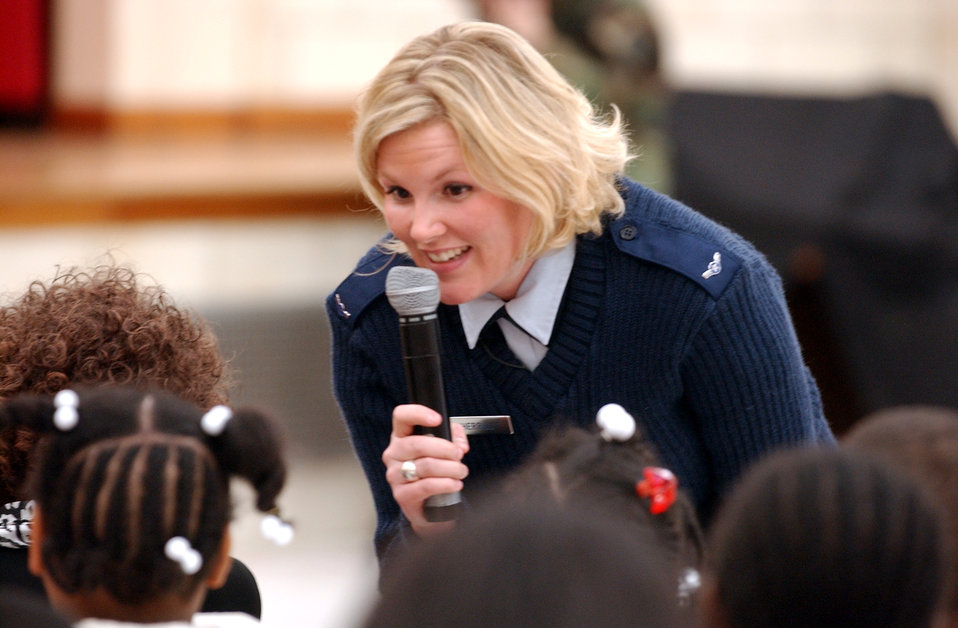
Operation Fly Straight

WASHINGTON -- Airman Tenieka Sherrill talks with students from King Elementary School here Feb. 20 during Operation Fly Straight. The program educates elementary school children about the long-term effect that drug use could have on their lives. Airmen from Bolling Air Force Base, D.C., presented the program to the school. Airman Sherrill is a dental technician at Bolling.